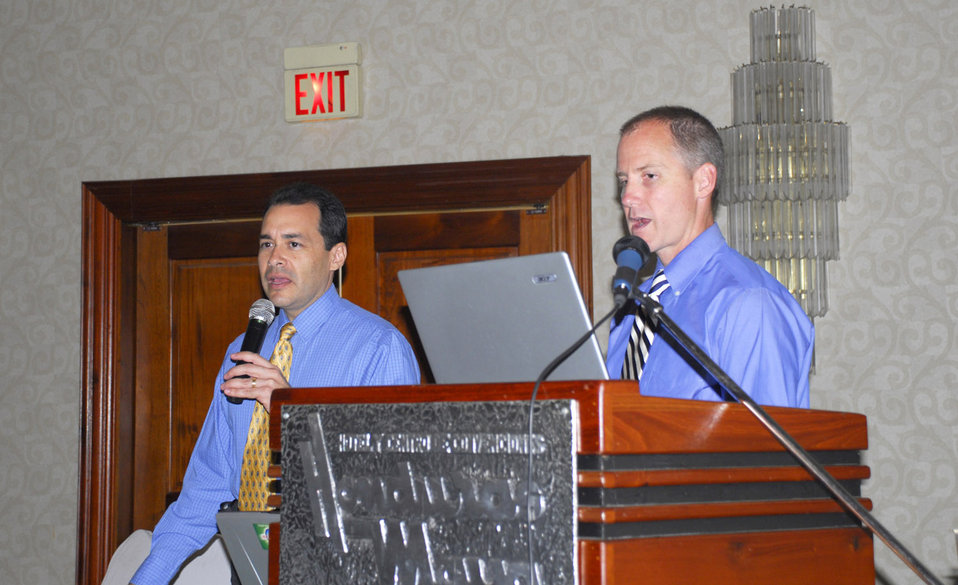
JTF-Bravo MEDEL team teach trauma course to Honduran medical proffesionals

Army Lt. Col. Barry Martin (right) teaches a course on abdominal and thoracic trauma to more than 200 medical professionals at a Honduran medical conference July 8 in Tegucigalpa, Honduras. The colonel was part of Joint Task Force-Bravo Medical Element team who taught Hondurans how to handle trauma. Colonel Martin is deployed from Walter Reed National Military Medical Center, Washington D.C.